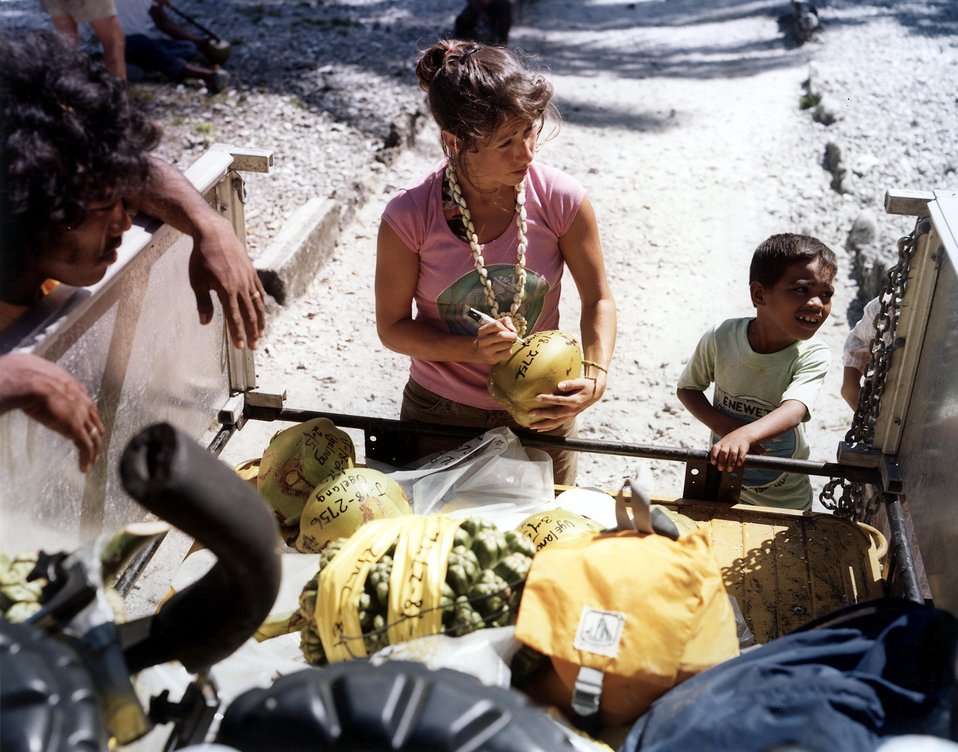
Two of the three cooling towers for Joseph M. Farley Nuclear Plant Unit 1.